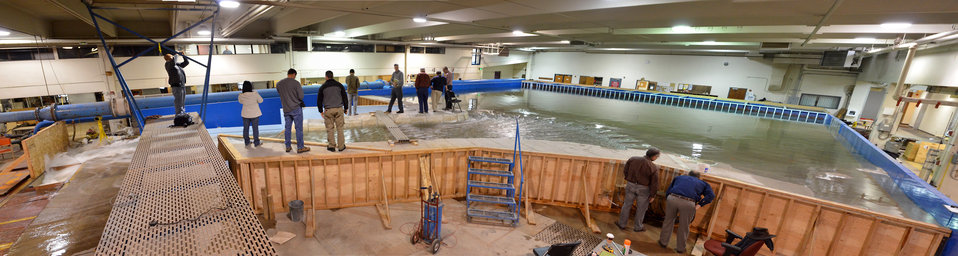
Corps tests new Isabella Dam model

A panoramic photo shows engineers from the U.S. Army Corps of Engineers Sacramento District’s Isabella Dam Safety Modification Project team inspecting a new scale model of the project at Utah State University’s Water Research Laboratory in Logan, Utah, Feb. 13, 2014. The 1:45 scale model is an essential part of the Corps’ pre-construction engineering and design phase and allows engineers to test the design against extreme storms and improve it before construction begins. Construction is scheduled to begin in 2017.